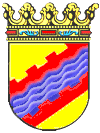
Vaakuna Inkeri